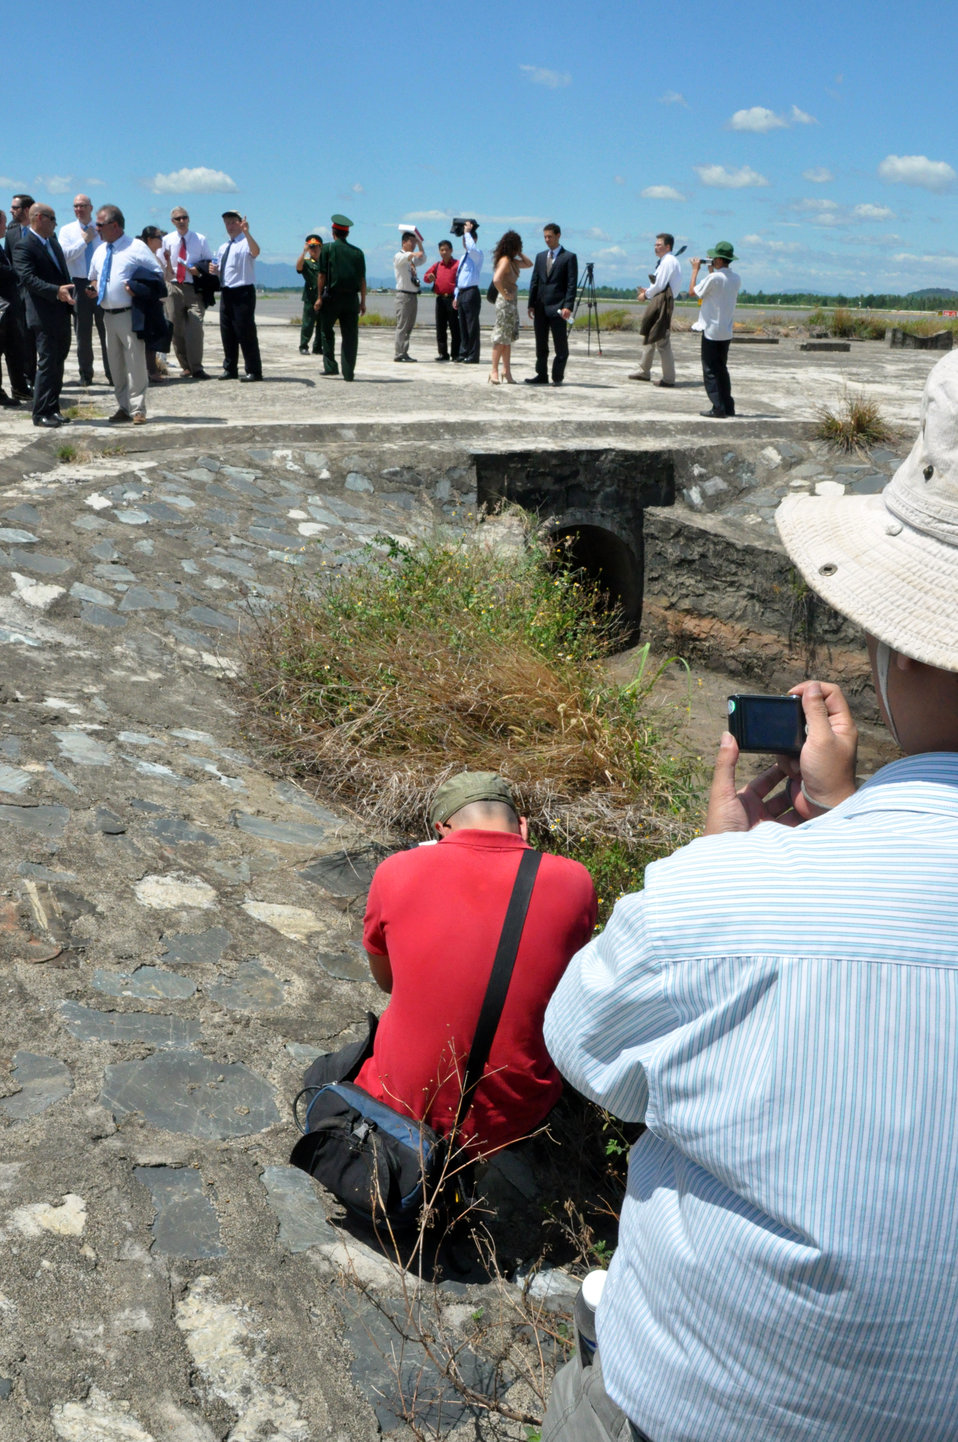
Photographers and visitors tour the airport site at the Environmental Remediation of Dioxin Contamination at Danang Airport Project Launch

Danang, August 9, 2012